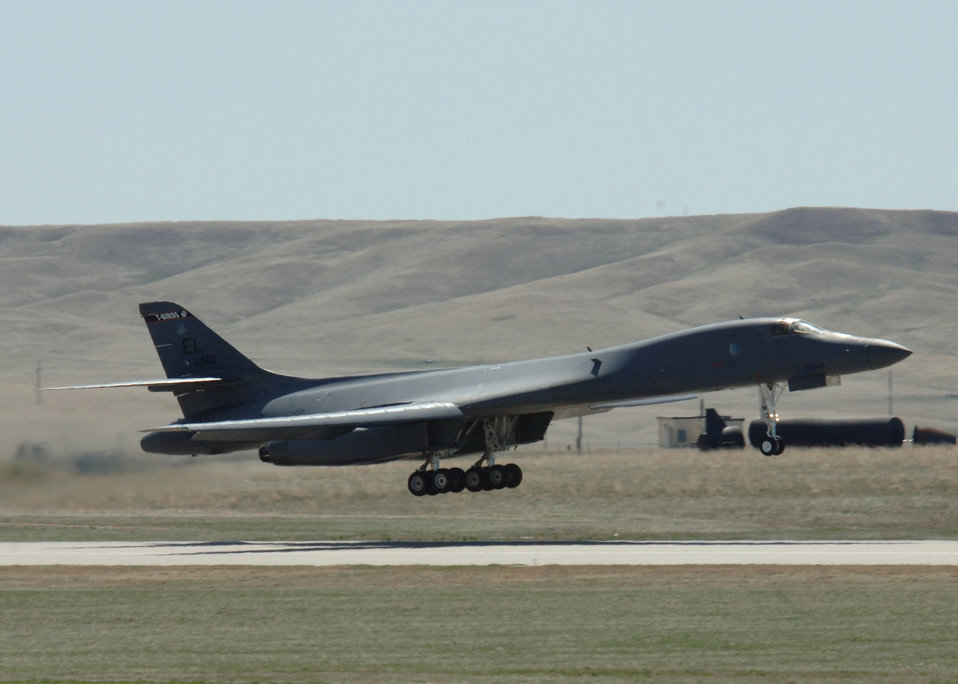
'Touch and go'

A B-1 Lancer from the 28th Bomb Wing practices